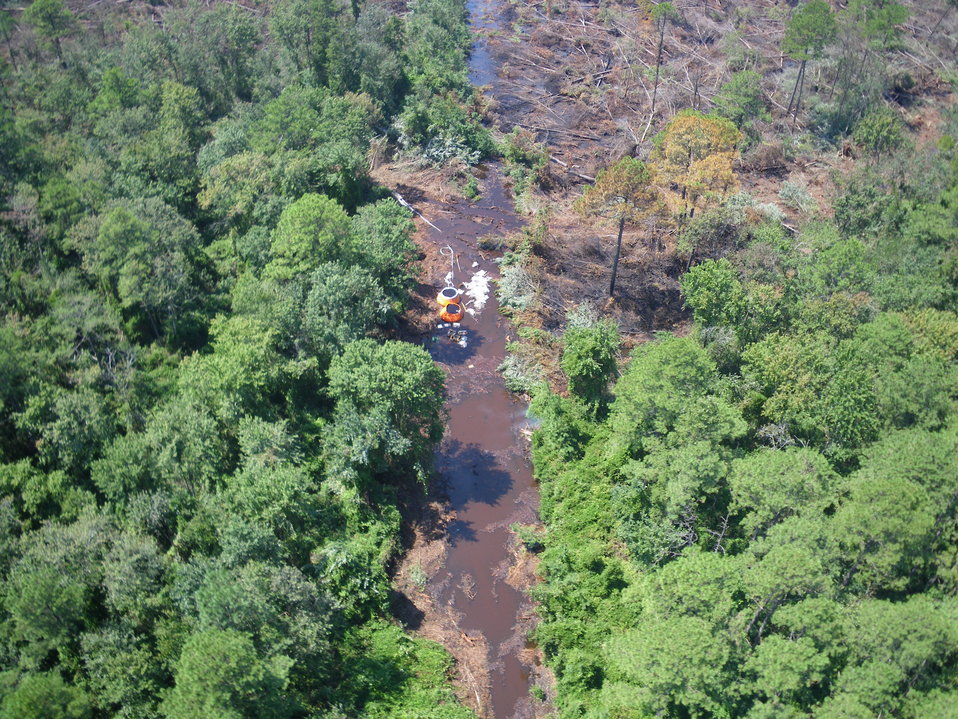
Irene floods fire roads

Suffolk, VA, August 2011: Portable water storage pools, known as 'pumpkins' and fire hose sit on a flooded road at the Lateral West Fire. Most equipment was removed from the fire in preparation for Hurricane Irene. The fire area received about a foot of rain.